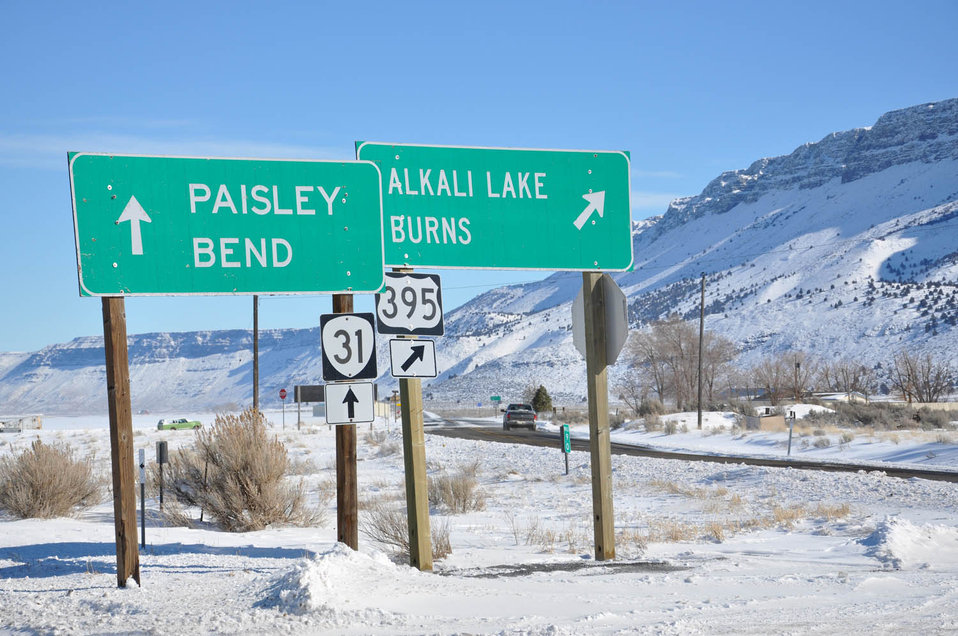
OR winter road scene

Road signs direct travelers along highway 31in Lake County, OR. The U.S. Department of Agriculture’s (USDA) Rural Development (RD) leaves a lasting footprint as a champion of locally led, place-based rural economic and community development through such programs as the Rural Energy for America Program (REAP), Community Facilities Rural Development financing, and access to safe housing and affordable mortgages.